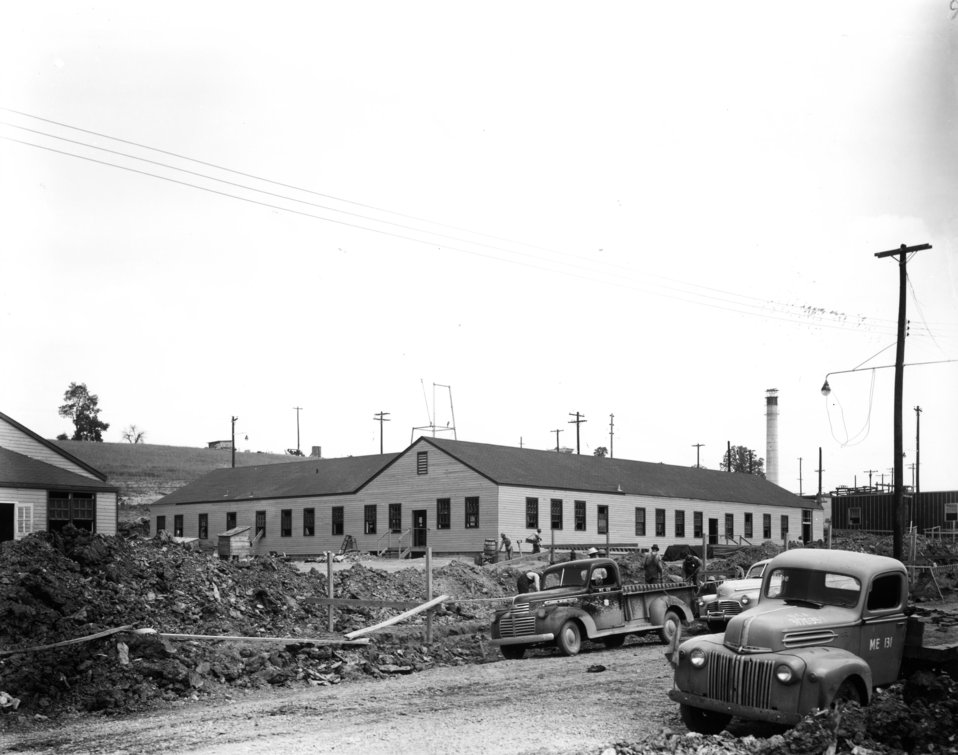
X-10 at Oak Ridge